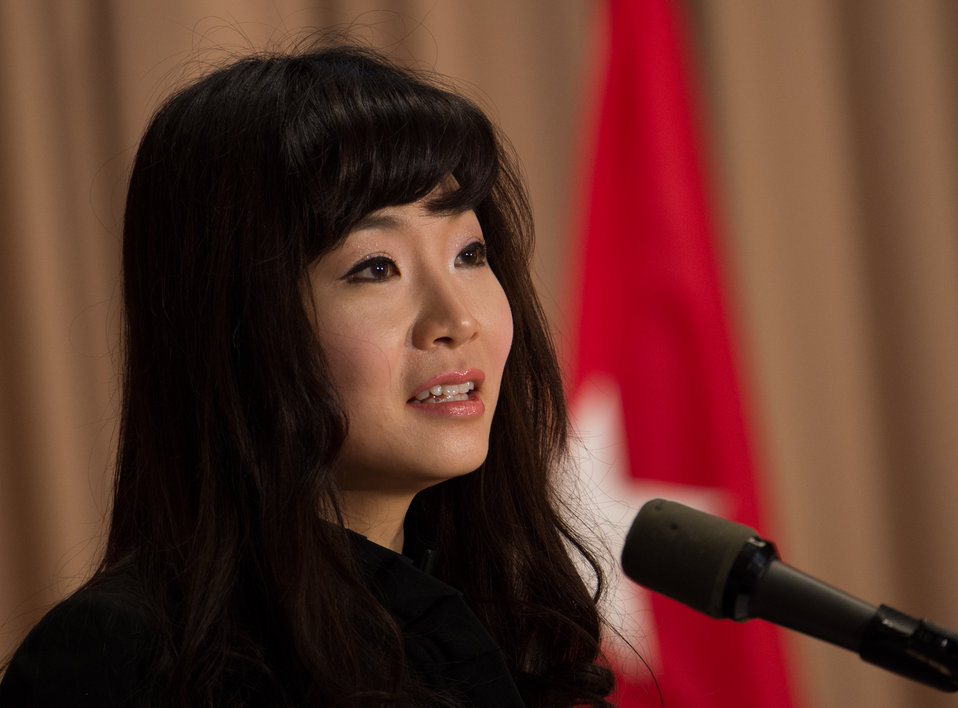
Soprano Amy Keesun Kwon sings the major Service songs of each of the Armed Services as U.S. Department of Agriculture (USDA) personnel who have served, or are serving in a Uniformed Armed Service are called by their Service to stand and be honored, during the 2013 USDA Veterans’ Day Observance, whose theme is “VALOR, COURAGE, SACRIFICE – HONORING ALL WHO SERVED,” in Washington, D.C., on Wednesday, November 20, 2013.